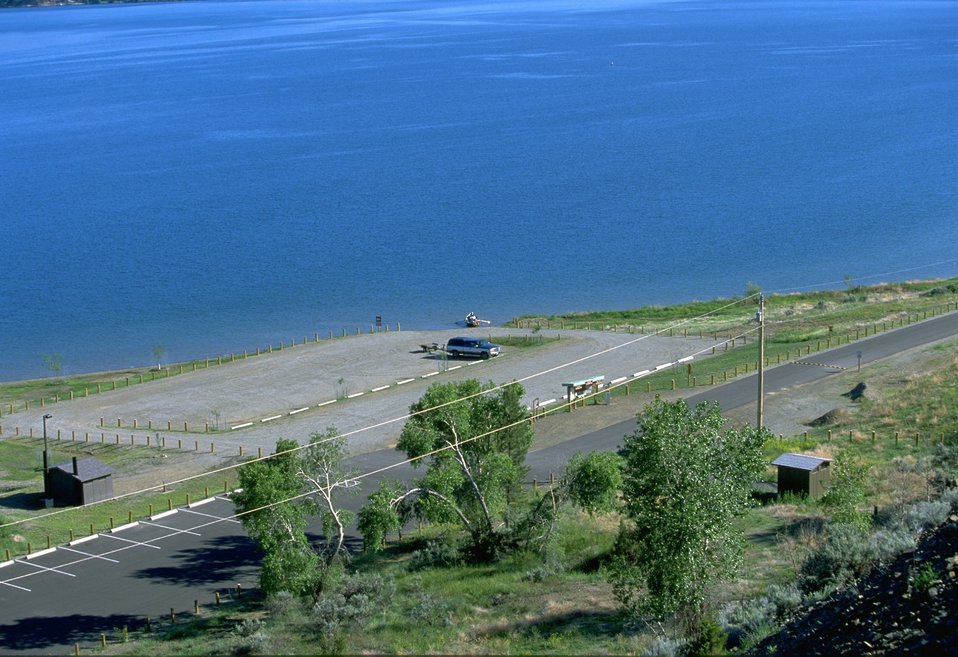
View of Clark's Bay Day Use Area on Hauser Lake